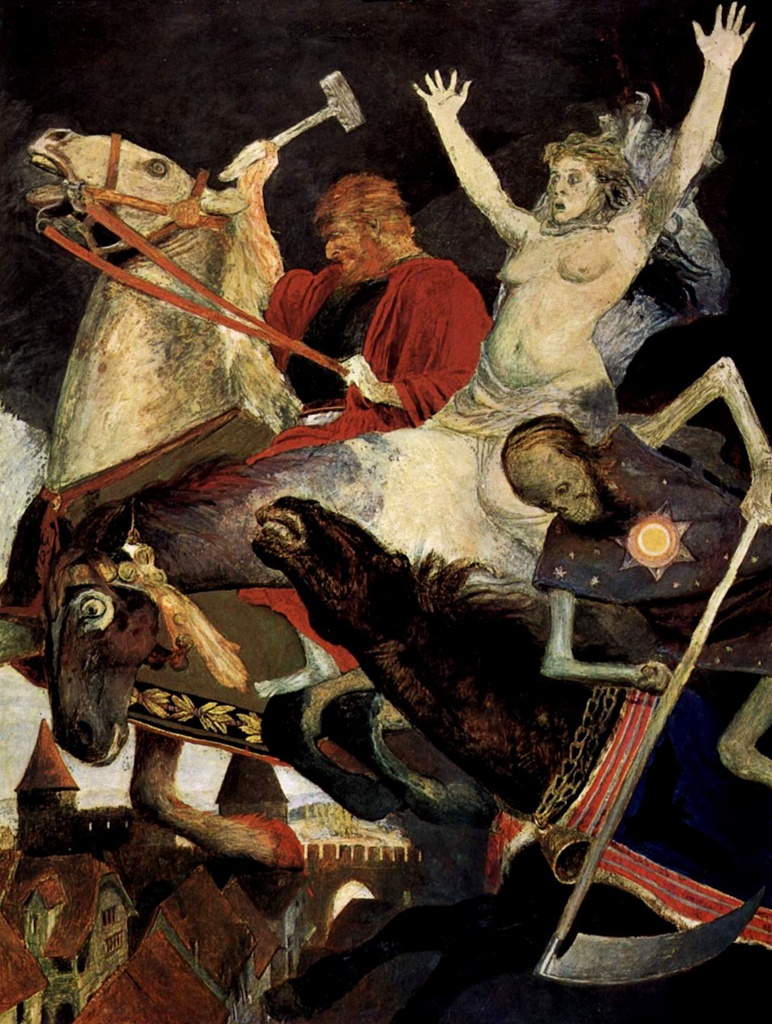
Arnold Böcklin Krieg 1896